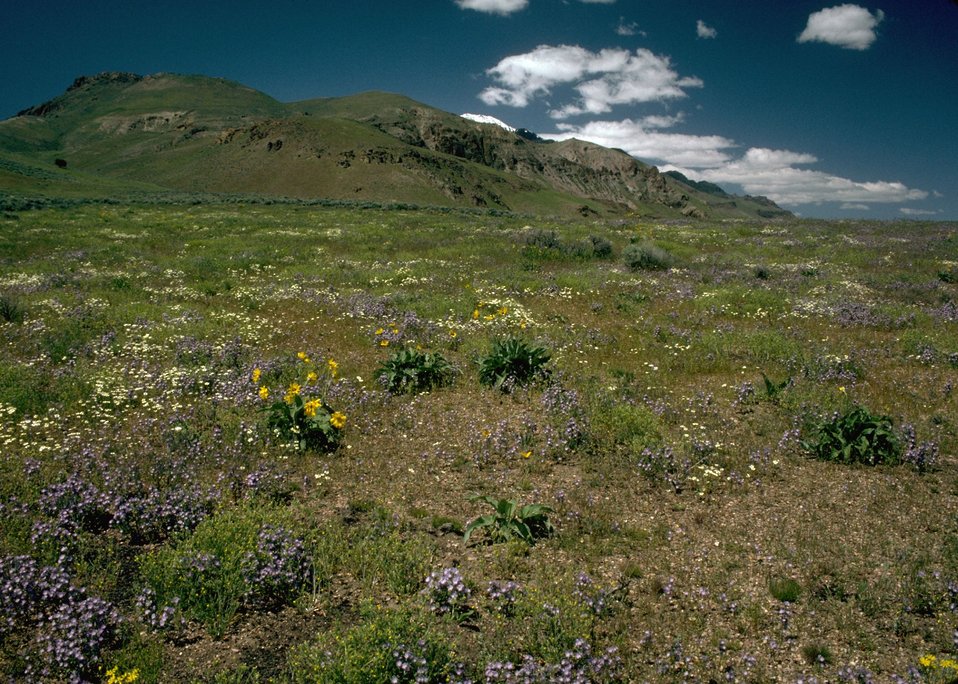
Wildflower display in the Alvord Desert on the East side of Steens Mountain in Southeastern Oregon.